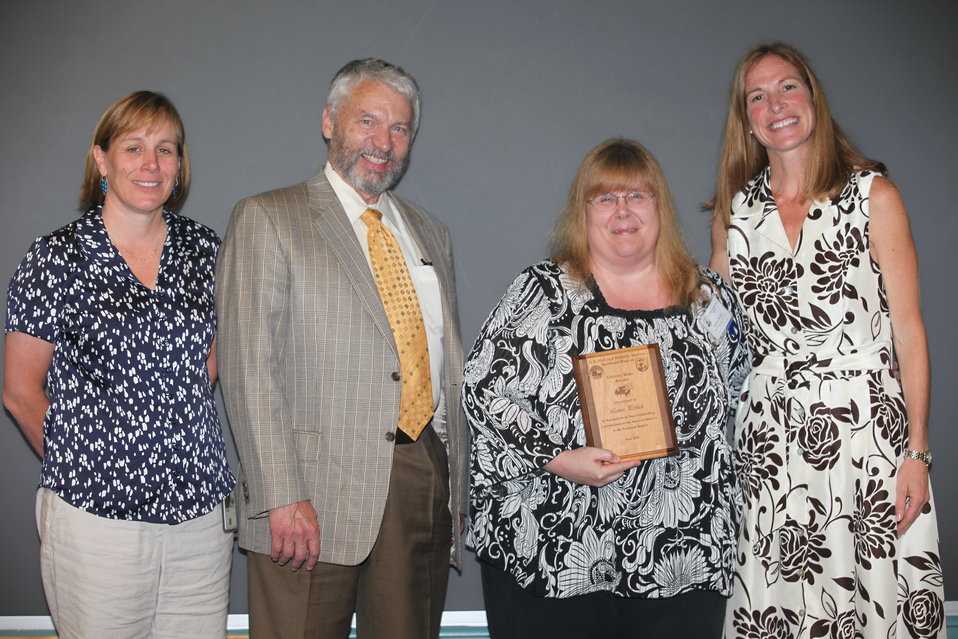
Laura Perlick of the New Jersey Field Office recieved a Region 5 Unsung Hero Award.
From left to right: Deputy Regional Director Deb Rocque, Deputy Director Rowan Gould, Laura Perlick, and Regional Director Wendi Weber